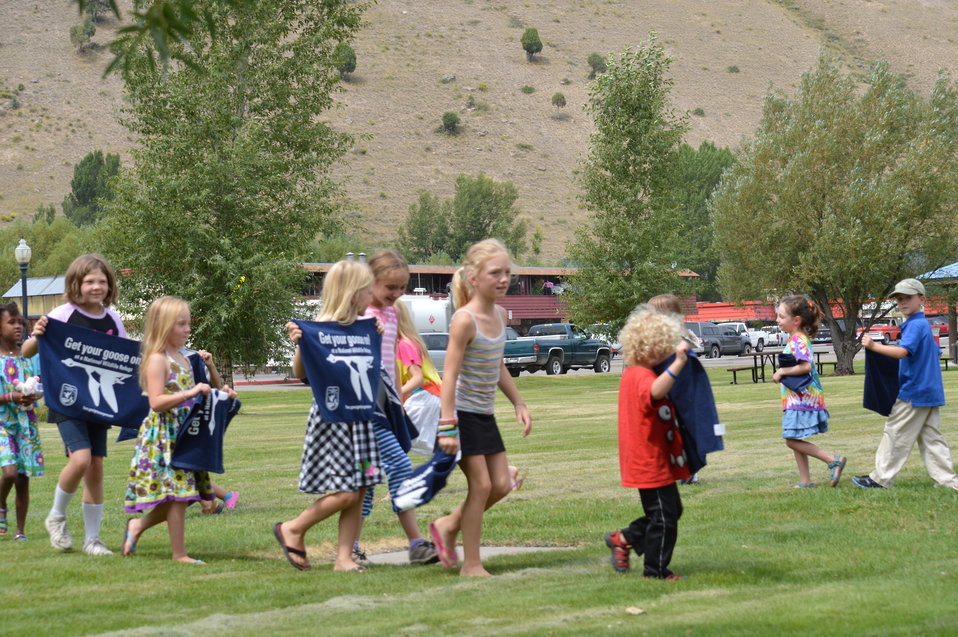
Get Your Goose On! - National Elk Refuge Style

On August 10, 2012 the U.S. Fish and Wildlife Service and Partners celebrated the 100 year anniversary of the establishment of the National Elk Refuge. In these photos, young attendees, along with Puddles the Blue Goose and the National Elk Refuge's mascot, showed us how to Get Your Goose On! with style.